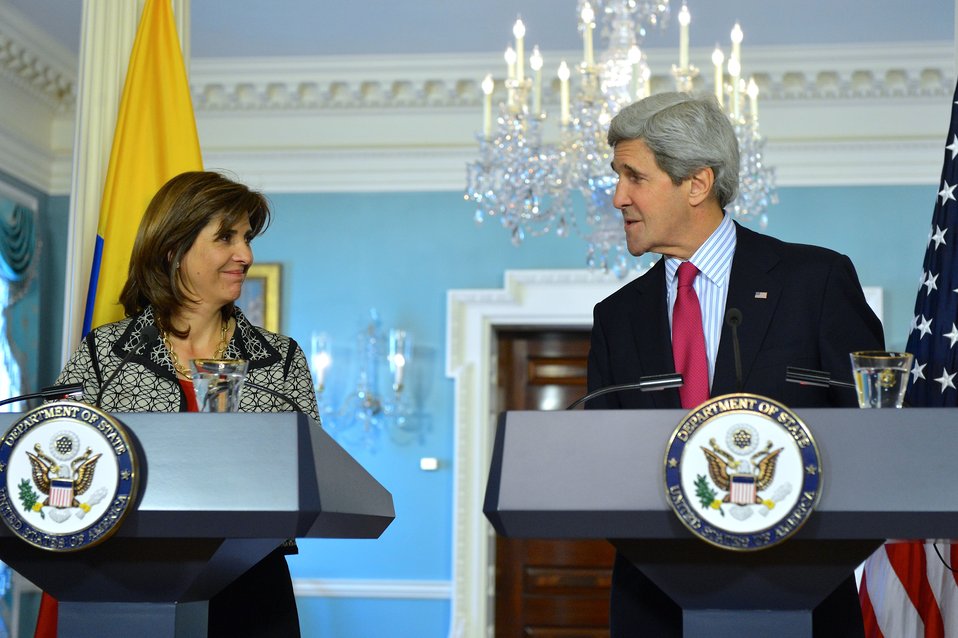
Secretary Kerry and Colombian Foreign Minister Holguin Address Reporters

U.S. Secretary of State John Kerry and Colombian Foreign Minister Maria Holguin address reporters after their meeting at the U.S. Department of State in Washington, D.C., on February 28, 2014.